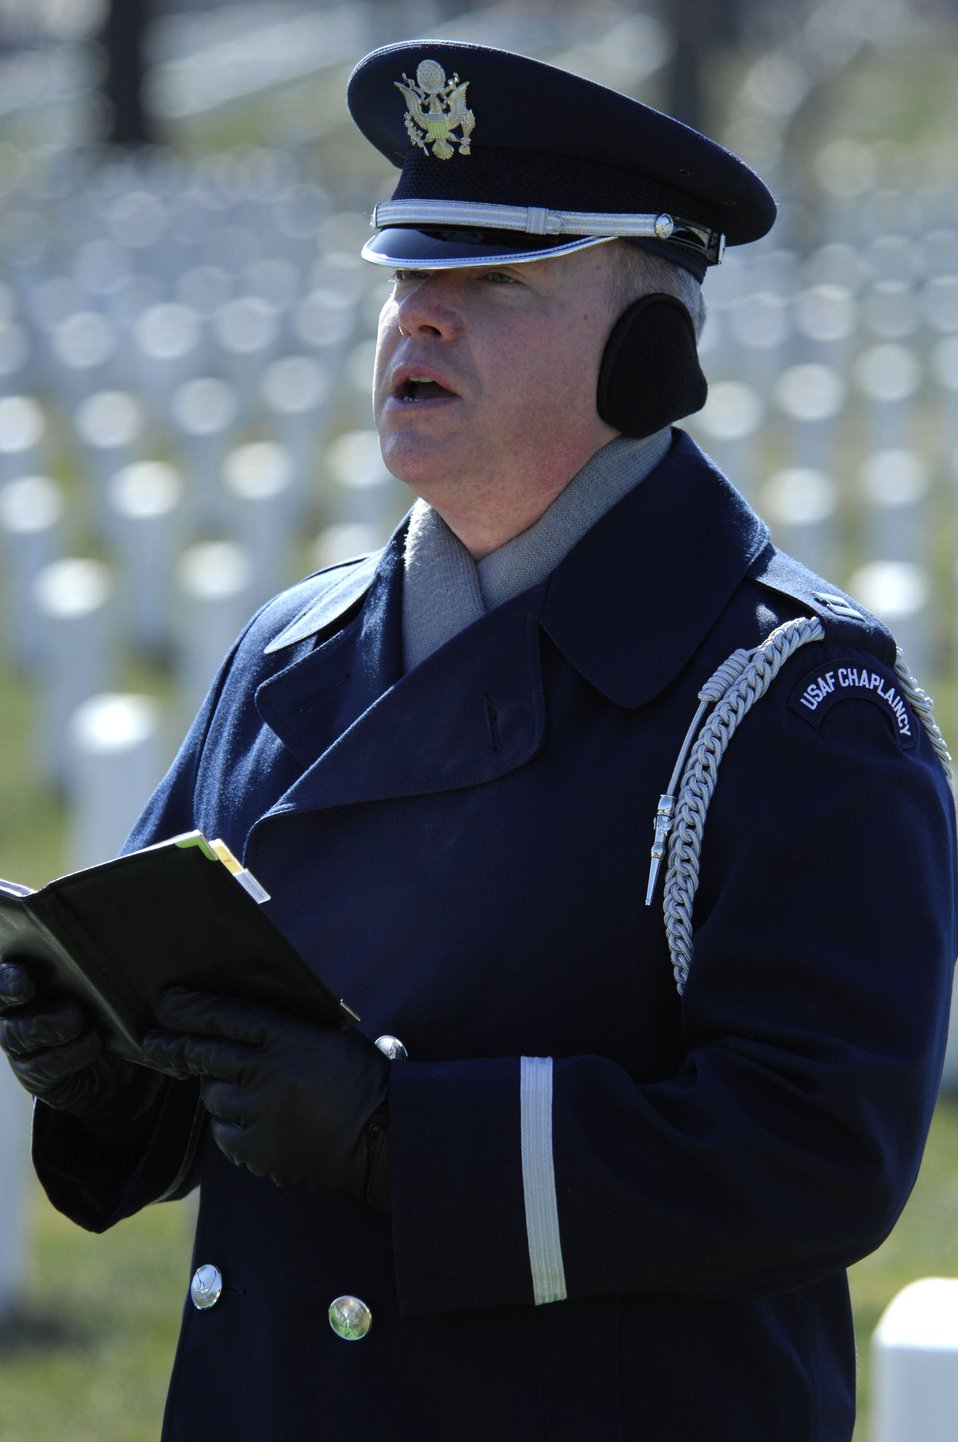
Chaplains provide honored service

Chaplain (Capt.) Kenneth Fisher is one of three Air Force chaplains assigned to Arlington National Cemetery to preside over funerals for Air Force members to be buried there. Each of the services has chaplains assigned and collectively, they conduct an average of 27 funerals a day.